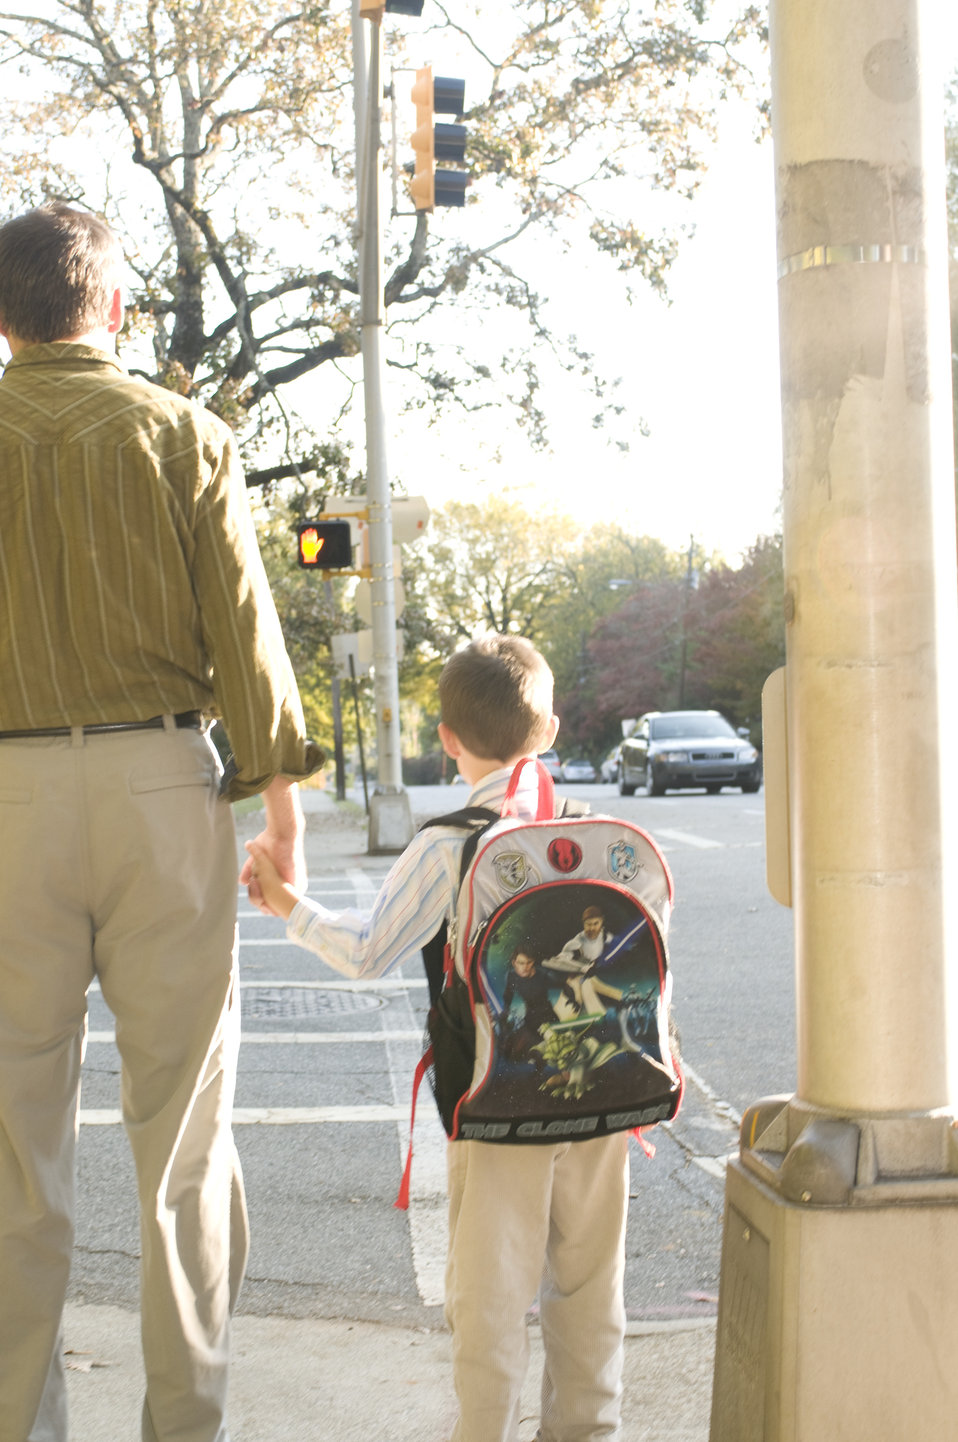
This father was shown walking on a Georgian city street, while to his left, he was holding hands with his young son. They had paused at an intersection while waiting for the crosswalk signal to indicate permission to cross the street. Adherence to the rules and regulations governing our roadways, as well as staying alert and focused on the activities taking place all around you, will make for a much safer walking experience, especially on a city street.